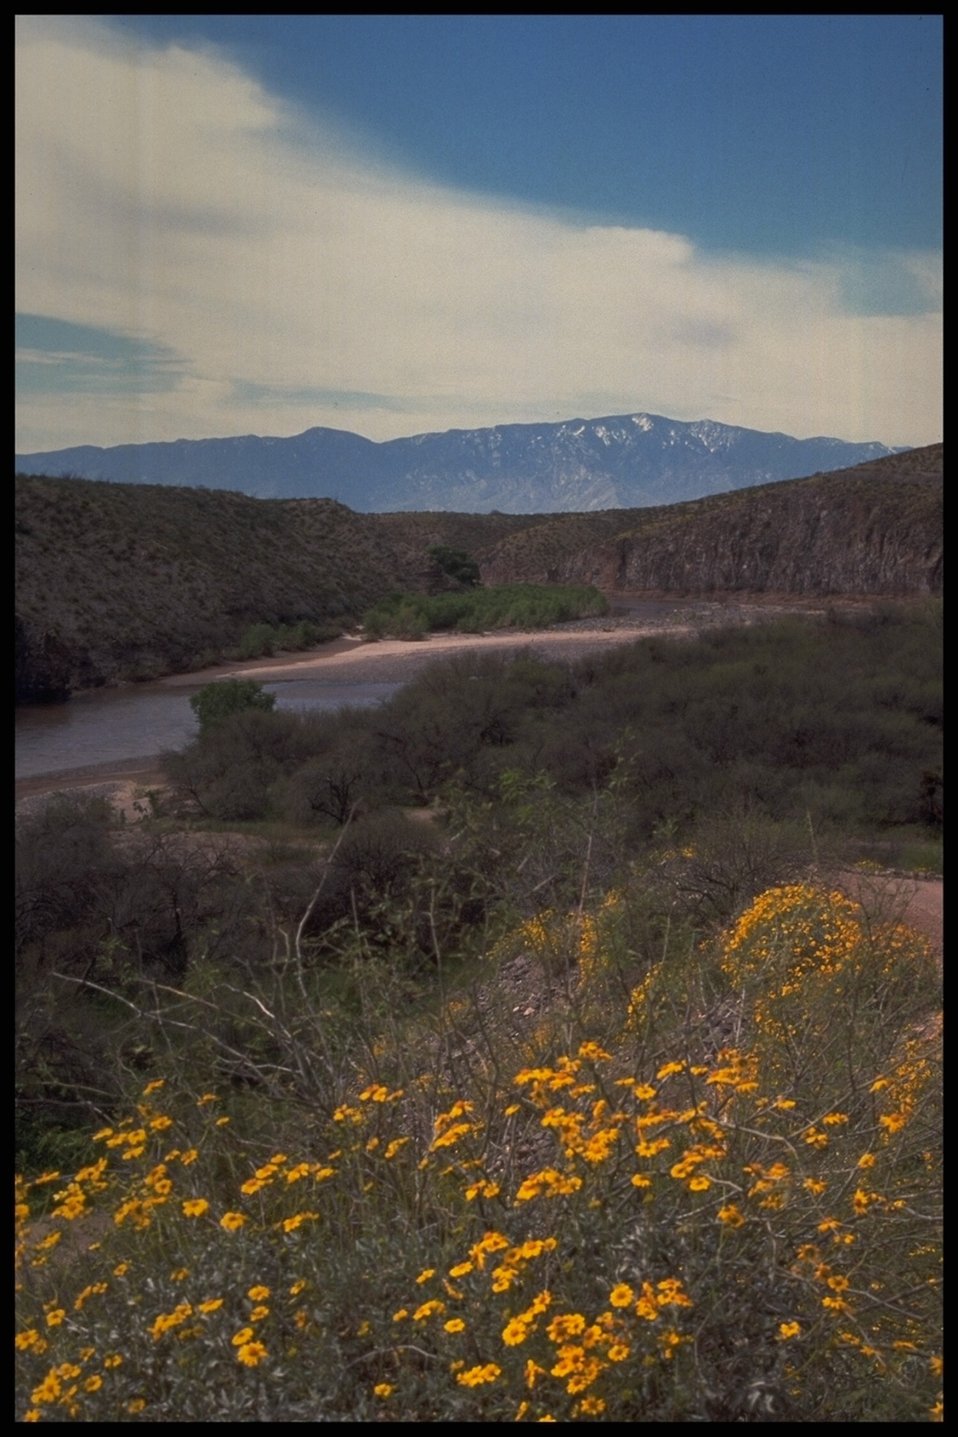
A 15-mile segment of Bonita Creek is part of a special area designated by Congress. Along with 23 miles of the Gila River, this creek is part of the Gila Box Riparian National Conservation Area.